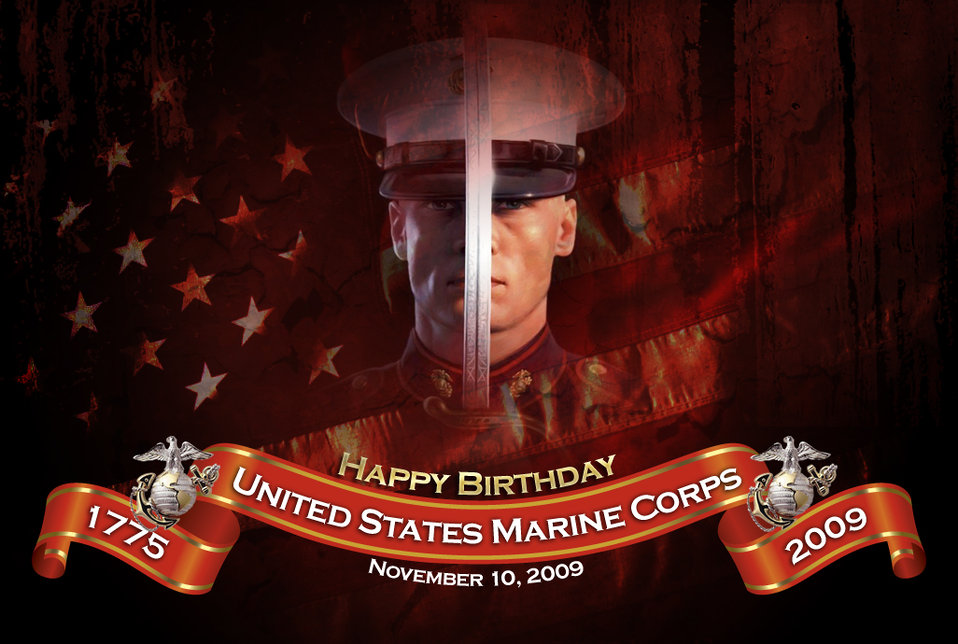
Marine Corps birthday

The secretary and chief of staff of the Air Force salute the Marine Corps on its 234th birthday.